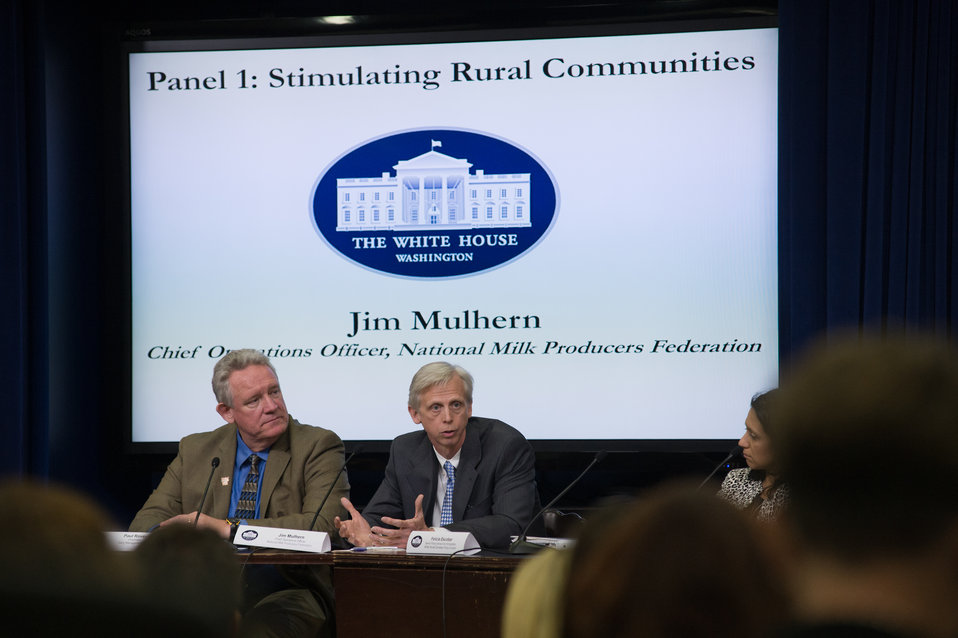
National Milk Producers Federation Chief Operations Officer Jim Mulhern (right) speaks at the Innovation Center For U.S. Dairy Sustainability Council Meeting on Wednesday, Apr. 24, 2013, at the White House, in Washington, D.C.